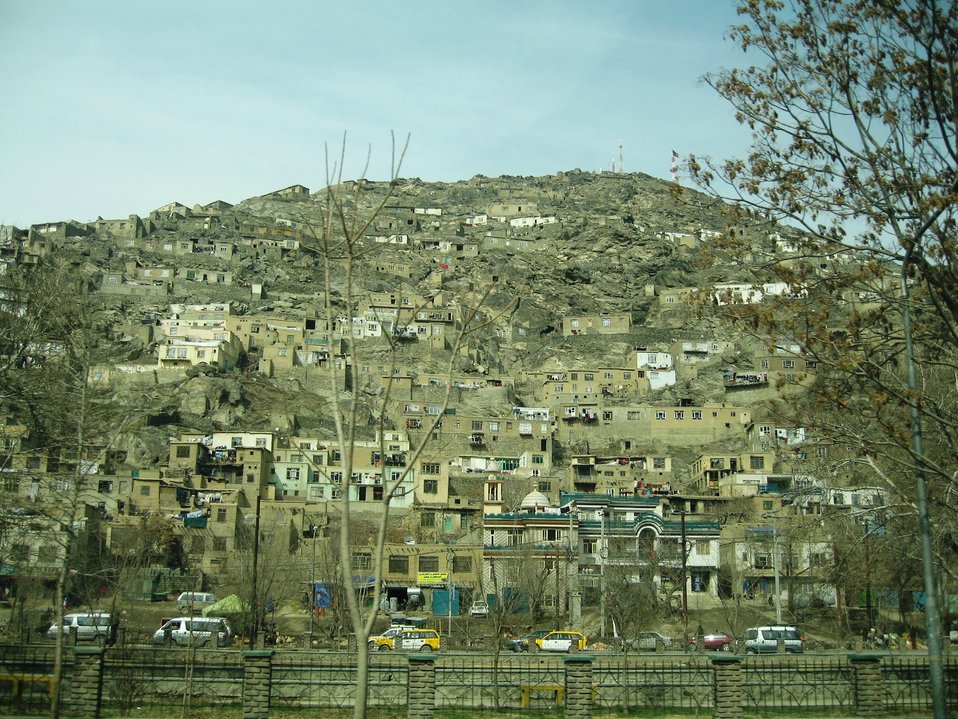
Kabul Neighborhood

A neighborhood in Kabul, Afghanistan.